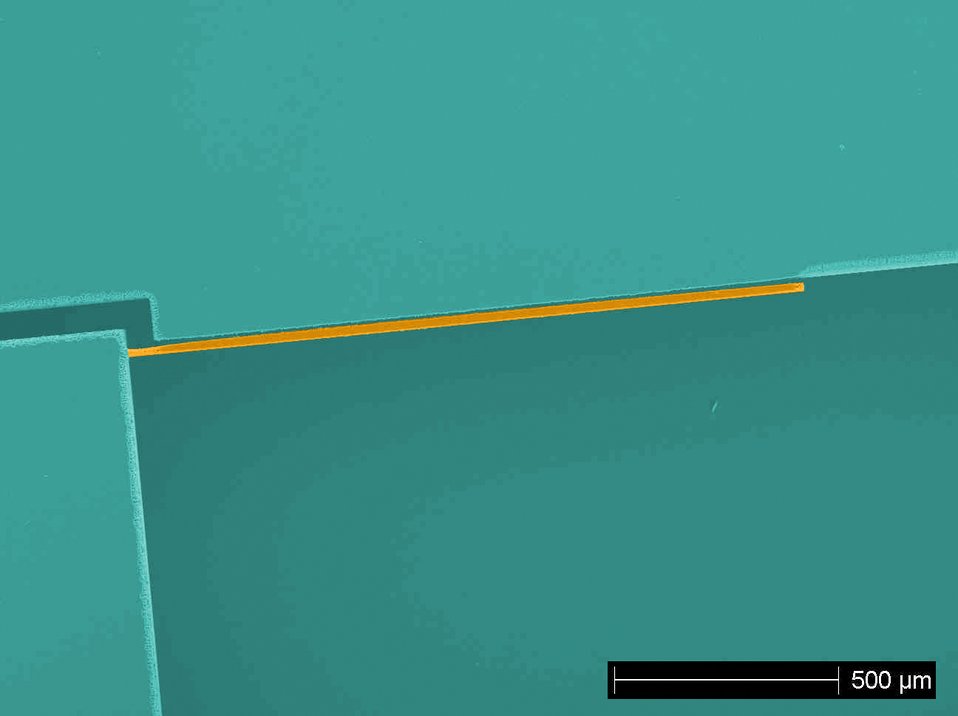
Radio Wave Cooling Offers New Twist on Laser Cooling

NIST physicists used radio waves to cool this silicon micro-cantilever, the narrow orange strip across the middle of this colorized micrograph. The cantilever, created by ion etching through a silicon wafer, lies parallel to a silicon radio-frequency electrode.